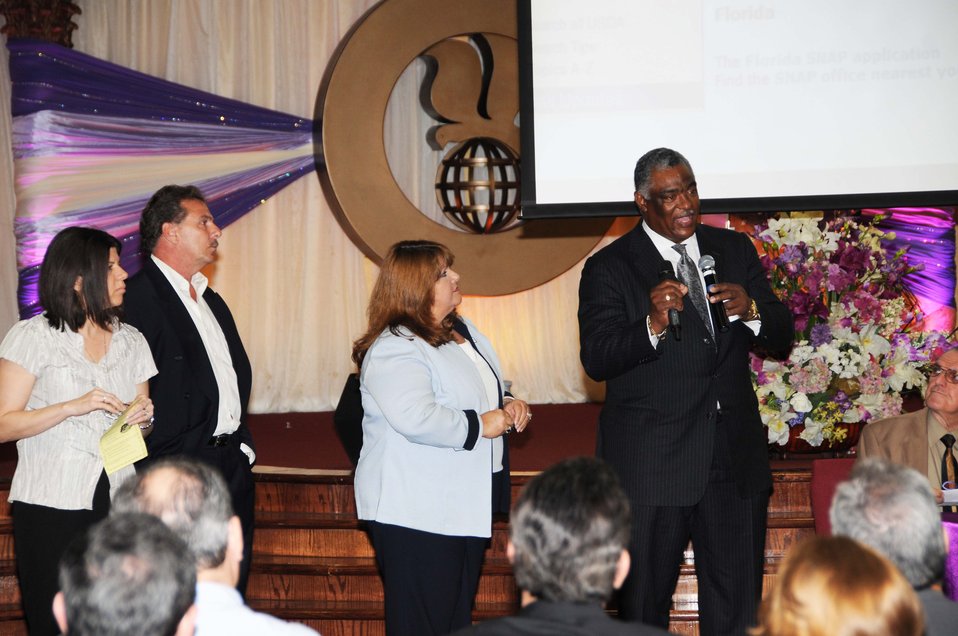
Don Pastors Meeting Miami 1

FNS Southeast Regional Administrator Donald Arnette speaks with over 200 Hispanic ministers in Miami about the Summer Food Service Program and the Supplemental Nutrition Assistance Program on March 8, 2011, to improve program access through faith-based community partners